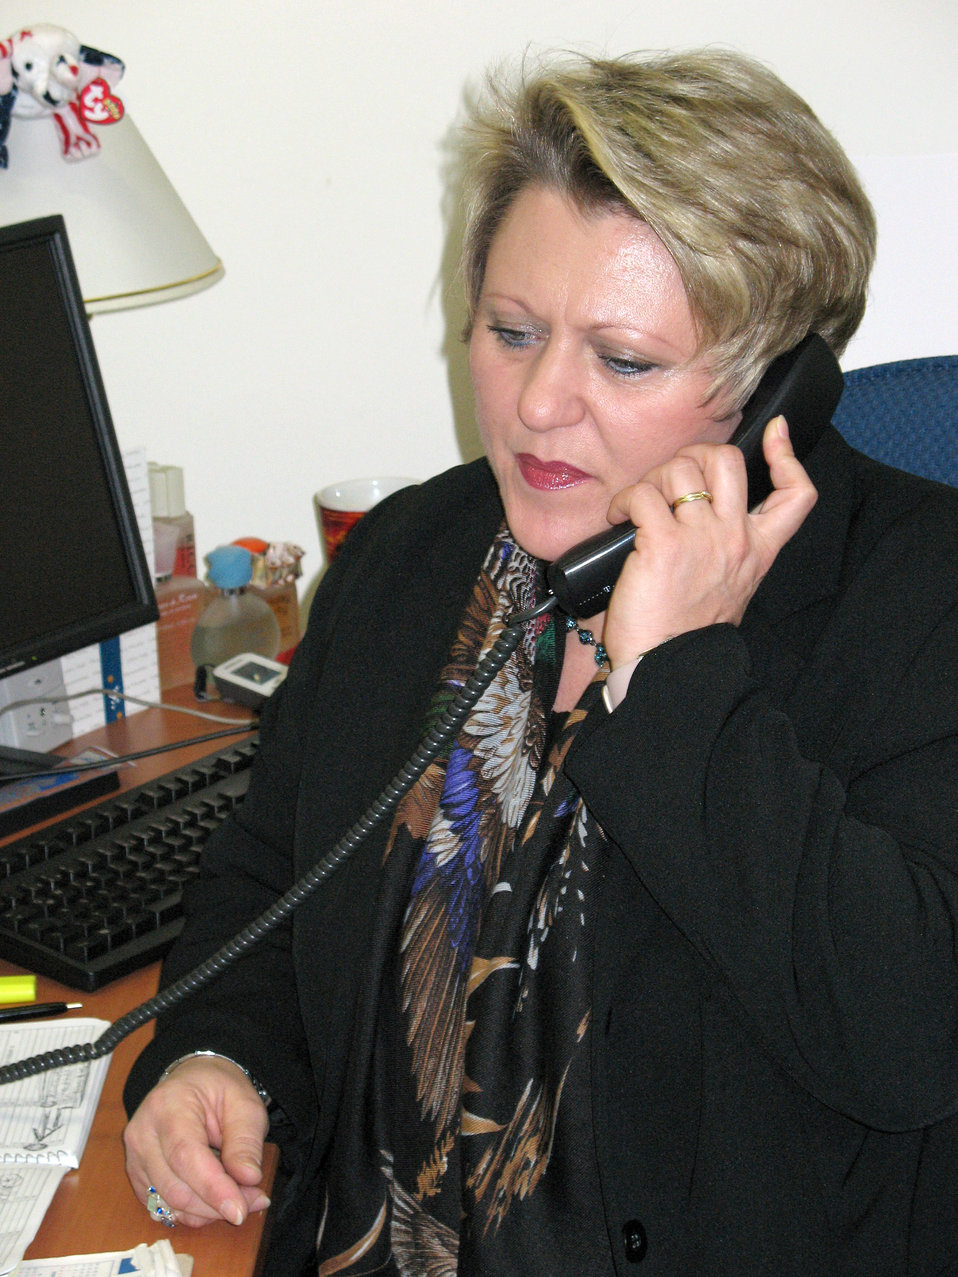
German community office is one-stop info shop for Americans

Host nation specialist, Sissi Koesling, answers a question for a customer at the German-American Community Office in Kaiserslautern, Germany. The GACO and has helped more than 10,000 customers since opening four years ago. The GACO provides information about the local community, German customs and more.